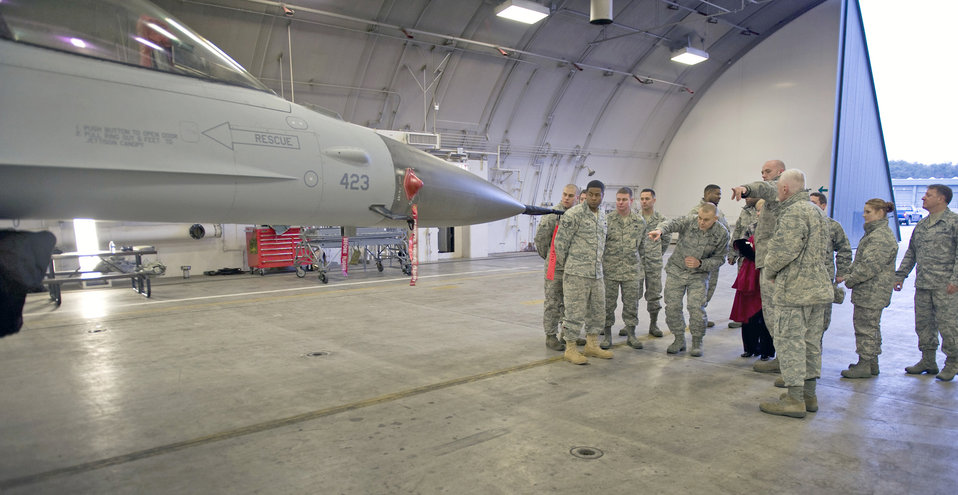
CMSAF visits Misawa

Tech. Sgt. Jarid Morris (right, pointing) identifies parts of an F-16 Fighting Falcon for Chief Master Sgt. of the Air Force James A. Roy (left, pointing) Dec. 28, 2010, in a hardened aircraft shelter at Misawa Air Base, Japan. At the end of the visit, Chief Roy gave Sergeant Morris a challenge coin for his hard work. Sergeant Morris is an avionics technician with the 14th Aircraft Maintenance Unit.